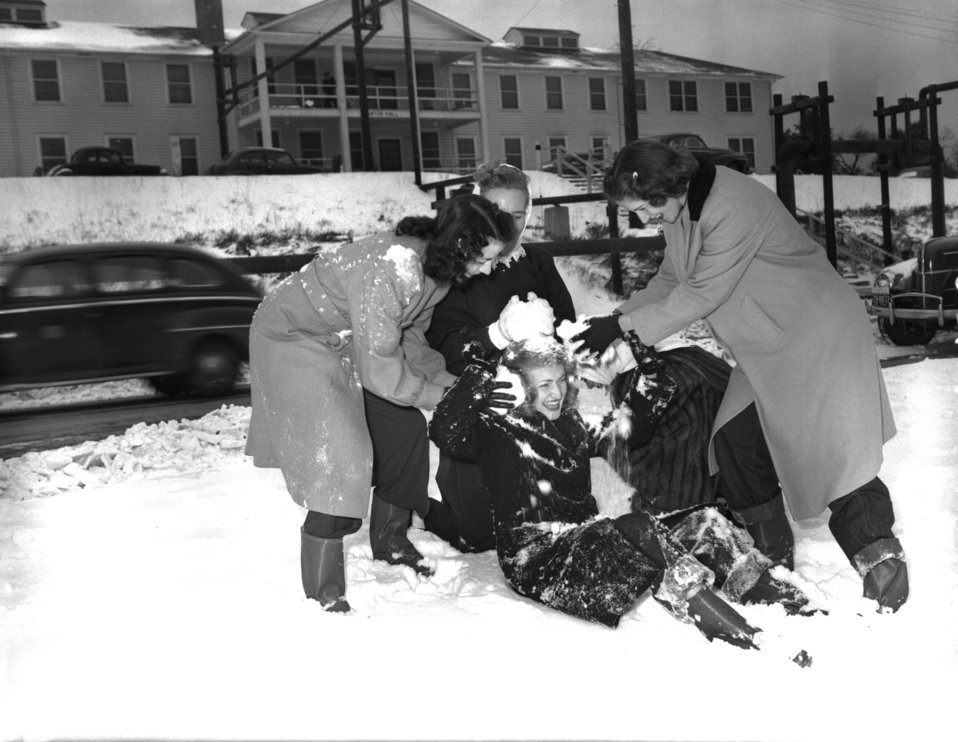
Fun in the Snow 2

4276-7u DOE Photo by Ed Westcott Oak Ridge Tennessee 1-25-1948